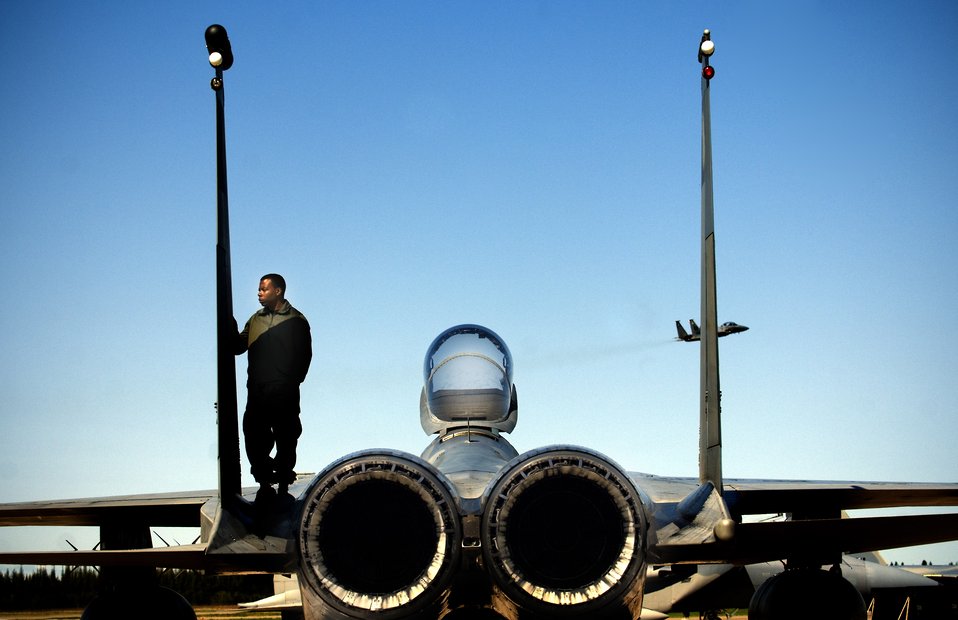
Maple Flag Exercise

Staff Sgt. Chester Johnson, from Eglin Air Force Base, Fla., performs a post flight inspection on an F-15C Eagle during a Maple Flag exercise at Cold Lake, Canada. Maple Flag 41 is a four-week international air combat exercise held annually at 4 Wing Cold Lake, Alberta, Canada. The exercise provides Canadian and allied aircrew with realistic training in a modern simulated air combat environment, and it emphasizes air operations involving large package coalition forces.